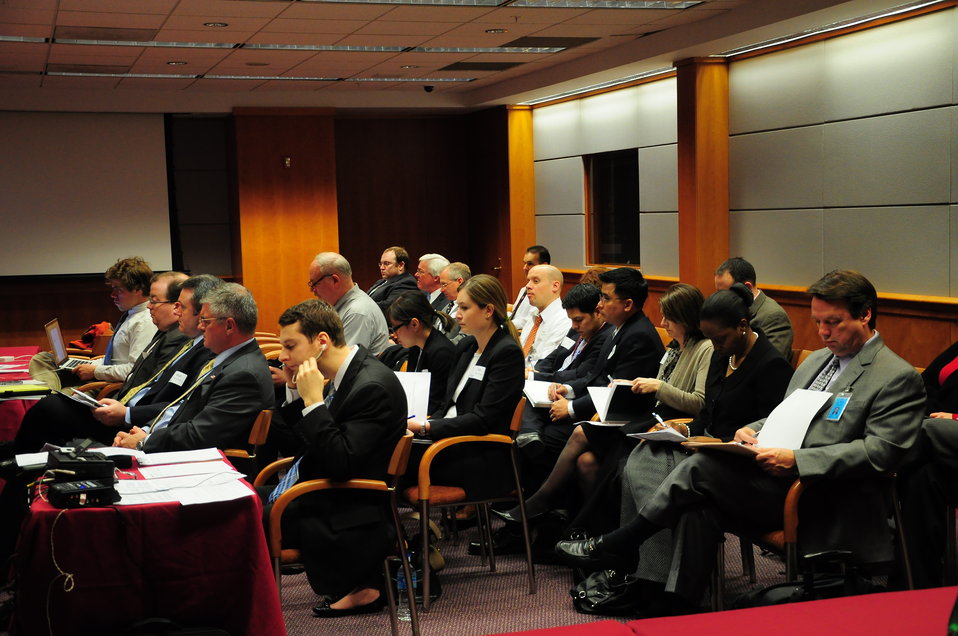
FCC ERIC Public Safety Workshop

ERIC: Public Safety Workshop; Commission Meeting Room; March 02, 2010